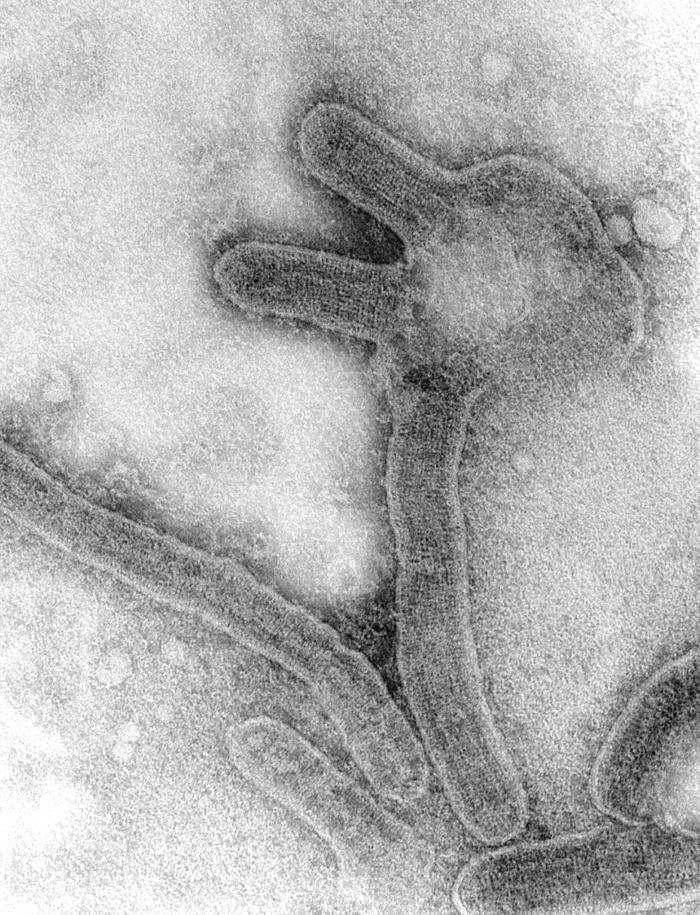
This negative stained transmission electron micrograph (TEM), captured by F.A. Murphy in 1968, depicts a number of Marburg virus virions, which had been grown in an environment of tissue culture cells. Marburg hemorrhagic fever is a rare, severe type of hemorrhagic fever which affects both humans and non-human primates. Caused by a genetically unique zoonotic (that is, animal-borne) RNA virus of the filovirus family, its recognition led to the creation of this virus family. The four species of Ebola virus are the only other known members of the filovirus family. See PHIL 10814 for a colorized version of this image.